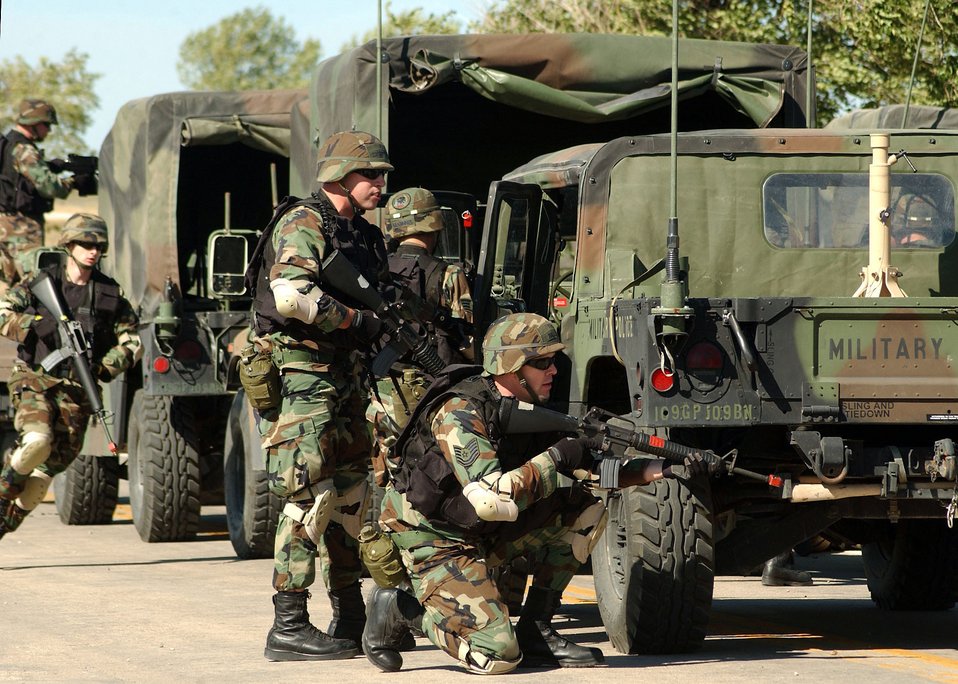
Firepower

ELLSWORTH AIR FORCE BASE, S.D. -- 2nd Lt. Matthew Sturevant, standing, and Tech. Sgt. Todd Pallas, kneeling, perform a combat firepower demonstration for Air Combat Command officials here recently. Both are from the 28th Civil Engineer Squadron.